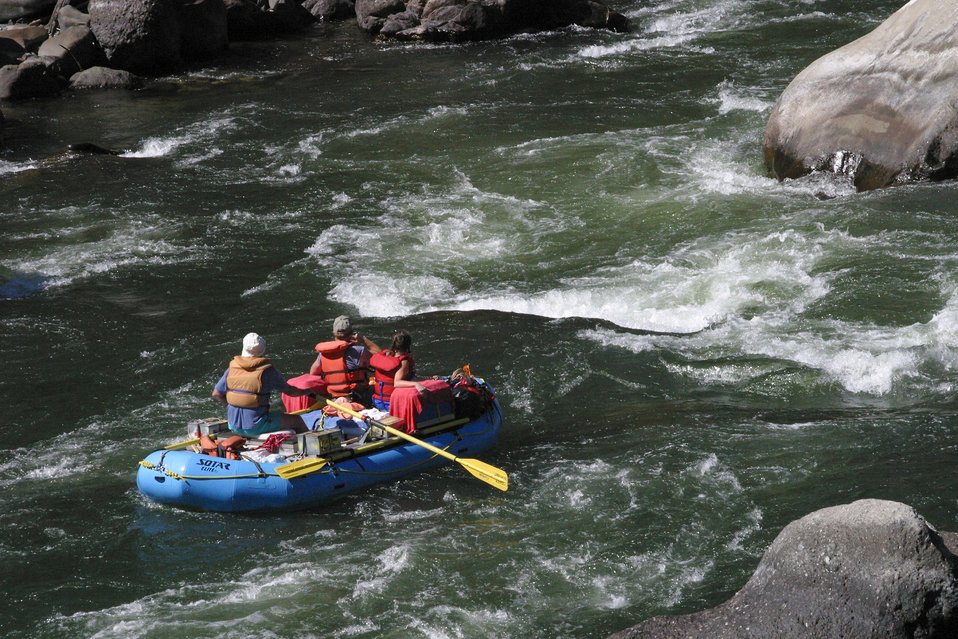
Boaters negotiate Blossom Rapids.